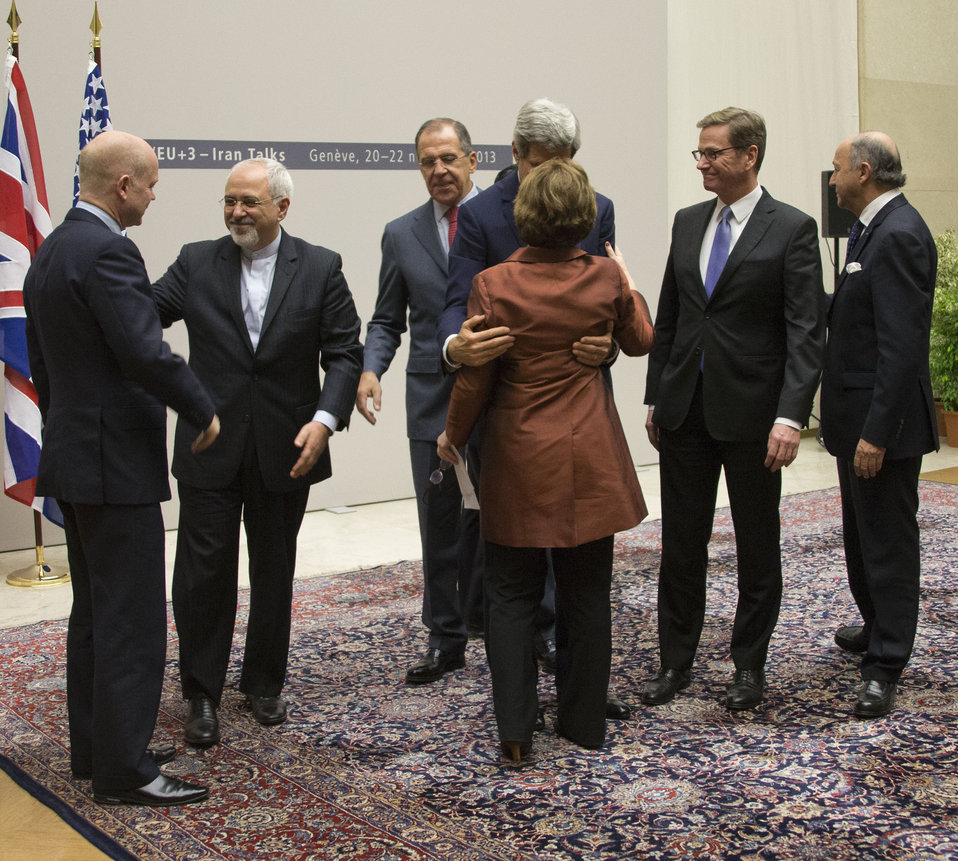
P5 1 Talks With Iran in Geneva, Switzerland

U.S. Secretary of State John Kerry embraces European Union High Representative Catherine Ashton speaks at United Nations Headquarters in Geneva, Switzerland, after the P5 1 and Iran concluded negotiations about Iran's nuclear capabilities on November 24, 2013.